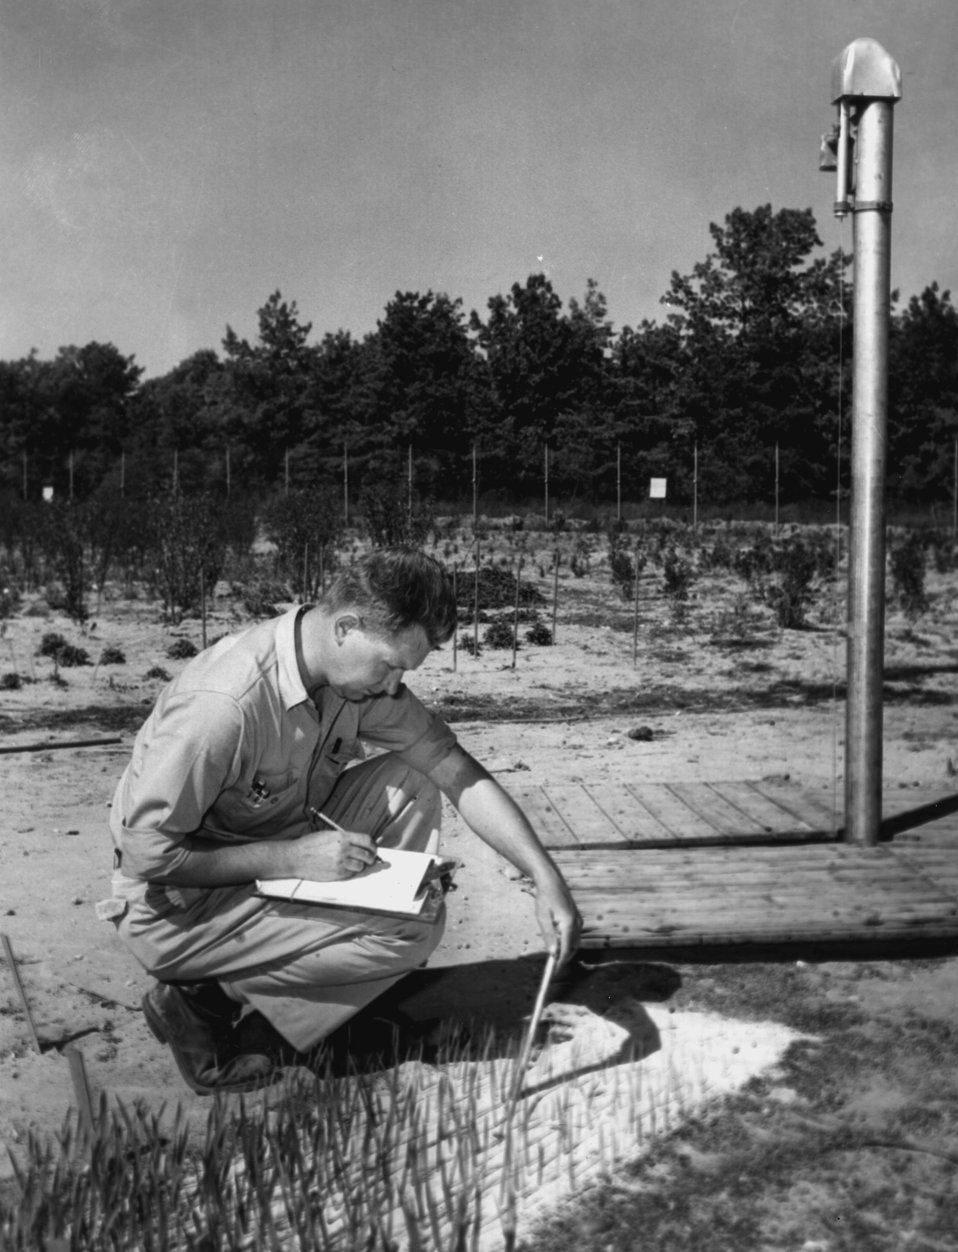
Center of the radiation field at Brookhaven National Laboratory. c. 1955